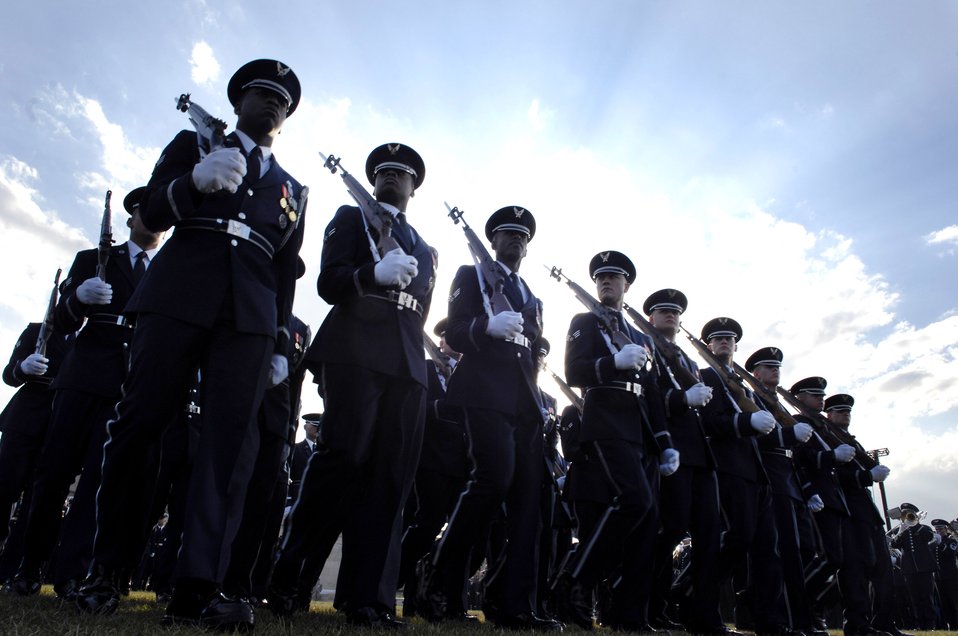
Military tradition to be evident in Ford funeral events

Military tradition will be evident throughout the events associated with the Dec. 26 death of former President Gerald R. Ford, as the services join the nation in bidding farewell to their former commander in chief.